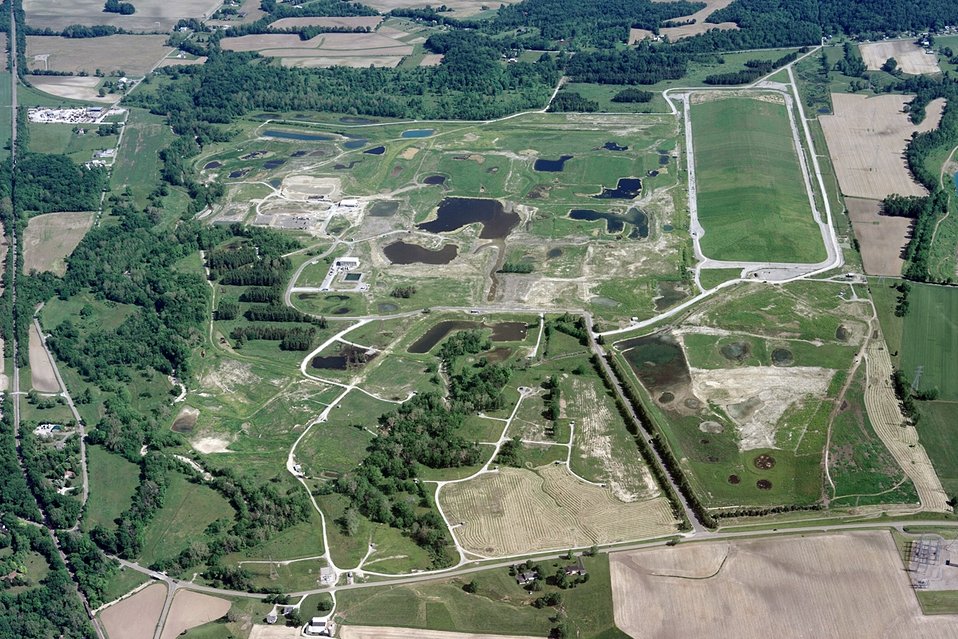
Fernald Preserve Aerial

Fernald - after